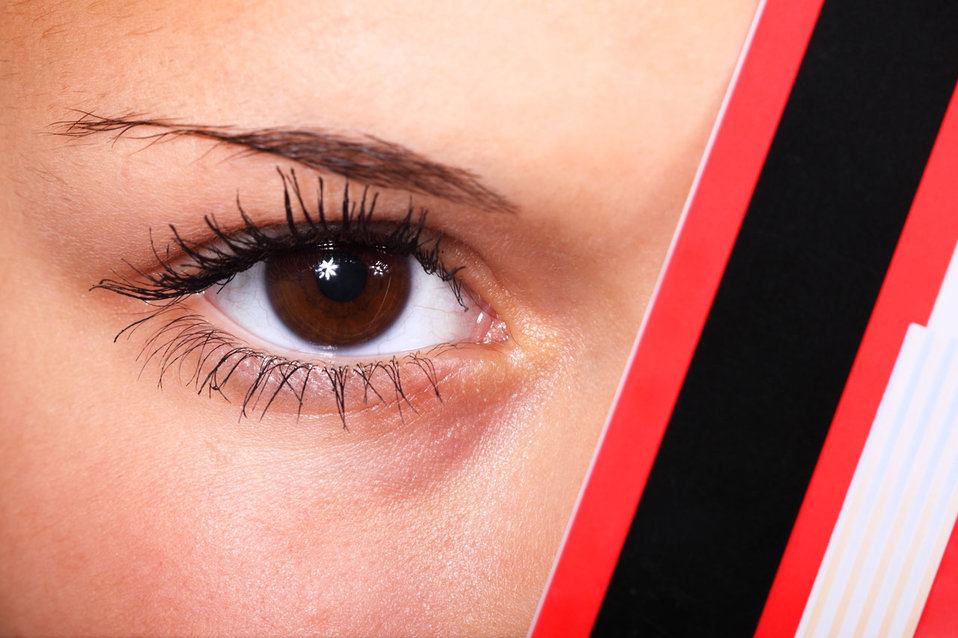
Eye and credit card.